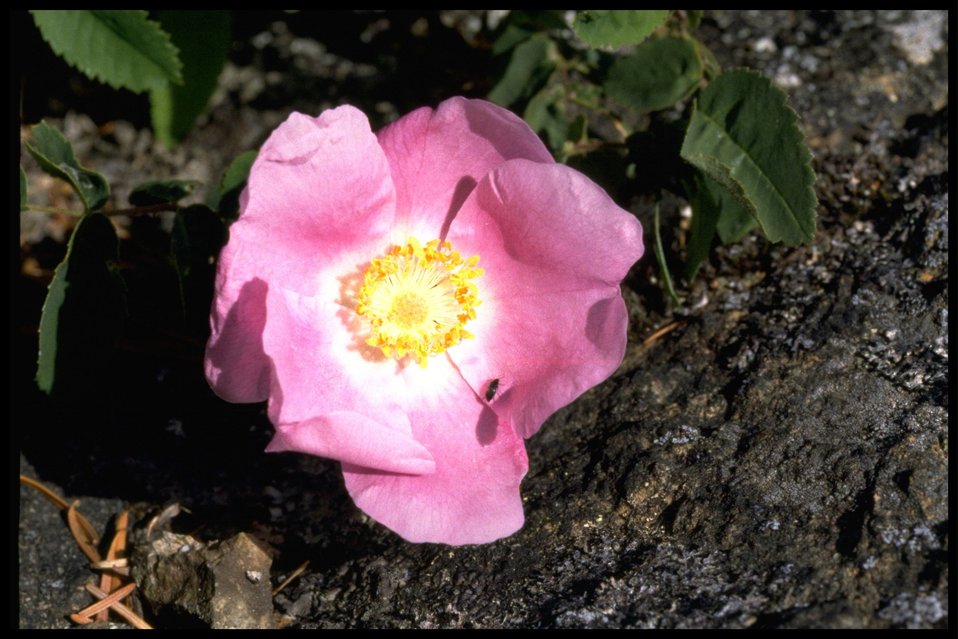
Small Pink wildflower at Point Colville.